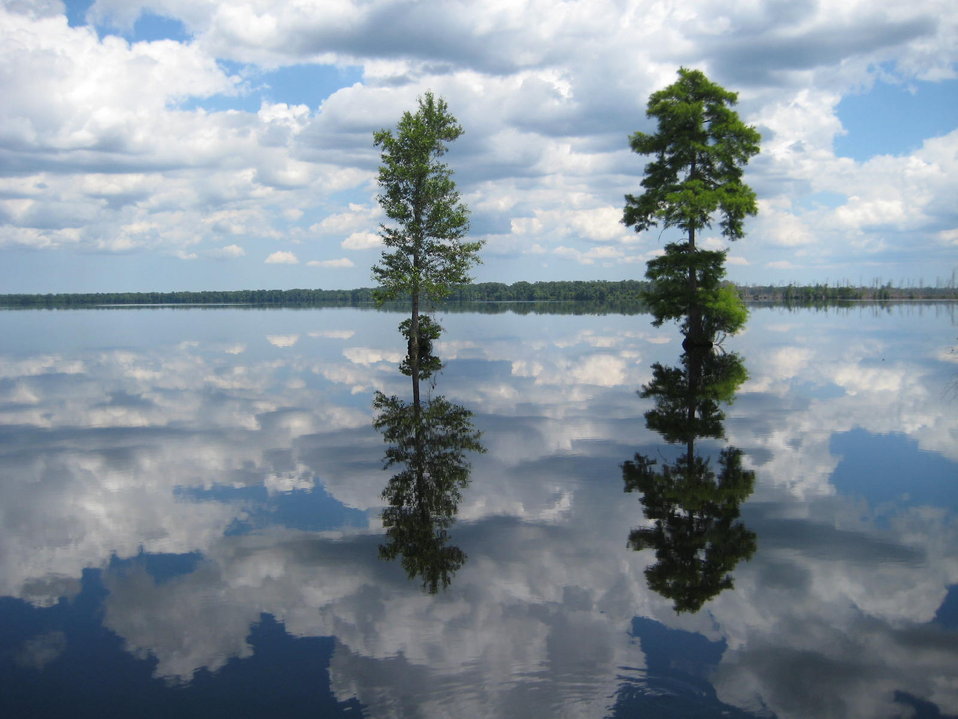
Flooding

Great Dismal Swamp National Wildlife Refuge.